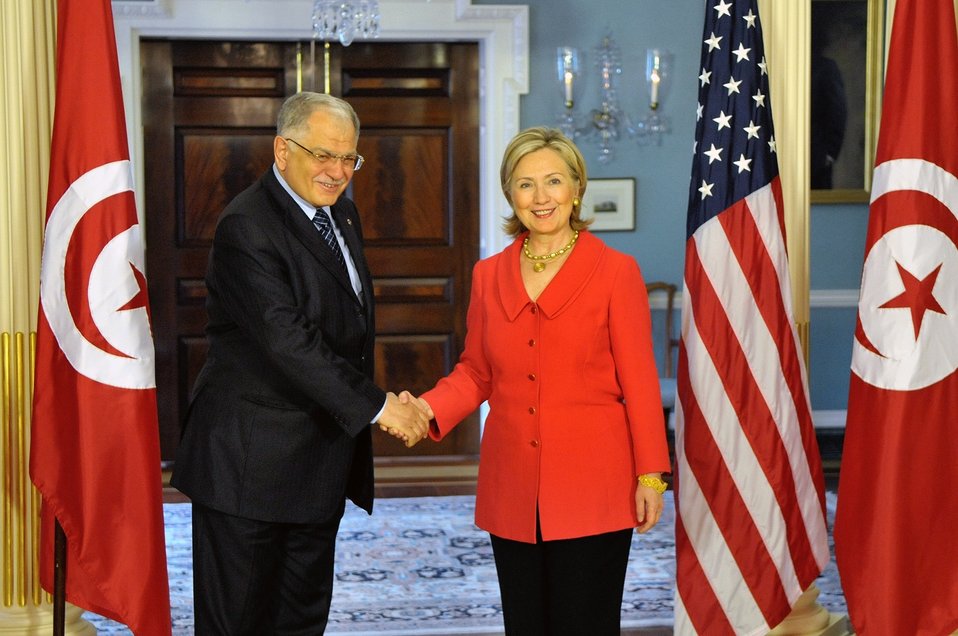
Secretary Clinton Shakes Hands With Tunisian Foreign Minister Morjane

U.S. Secretary of State Hillary Rodham Clinton shakes hands with Tunisian Foreign Minister Kamel Morjane after a bilateral meeting in the Treaty Room at the U.S. Department of State, Washington, DC, April 28, 2010.